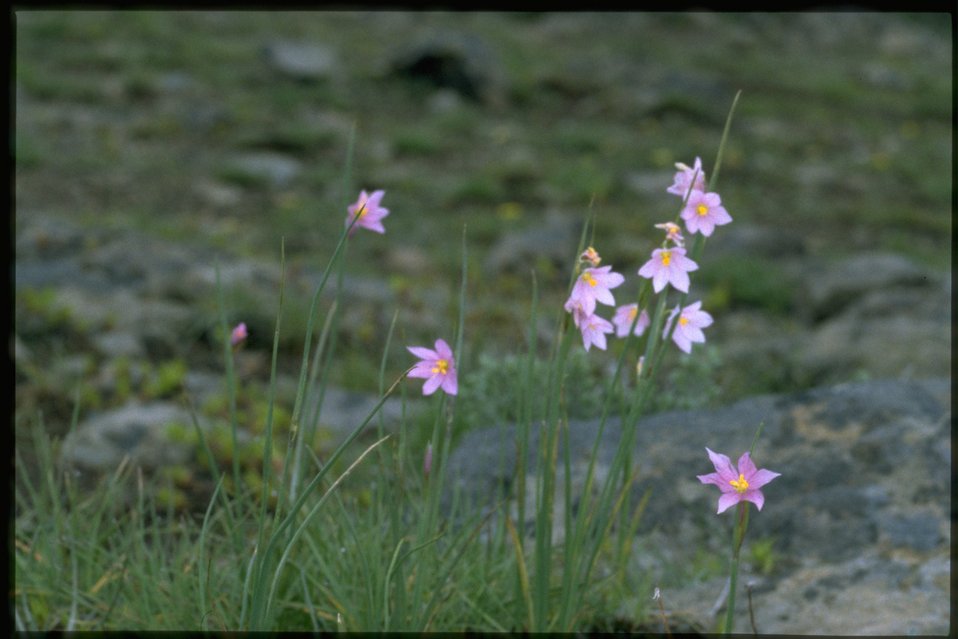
Farshot of Grass Widow, Sisyrinchium Douglasii, wildflowers.